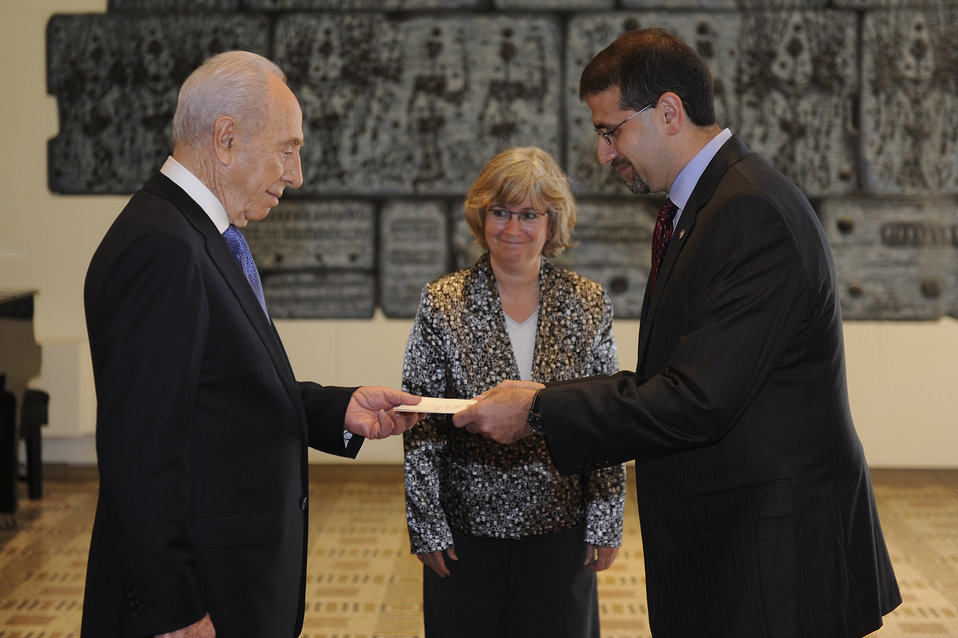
Ambassador Shapiro Presents His Credentials to Israeli President Peres

U.S. Ambassador to Israel Daniel B. Shapiro presents his credentials to Israeli President Shimon Peres at the President's residence in Jerusalem on August 3, 2011.